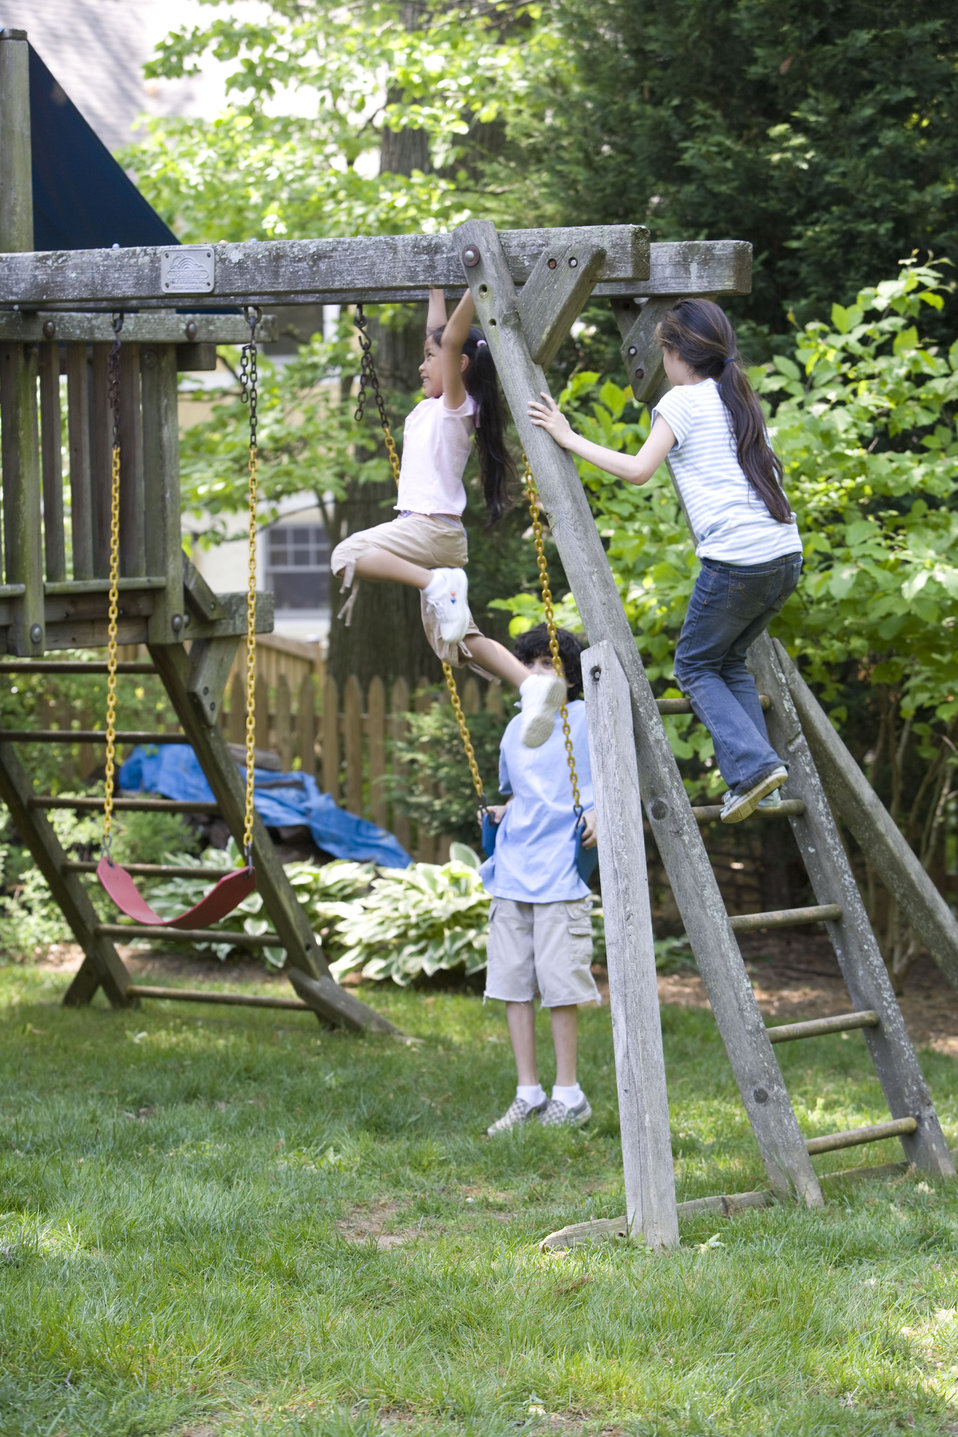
Children love playing outside, and these children were thoroughly enjoying their wooden swing set, and all were having fun in the fresh outdoor air, and the beautiful weather. It's important to note that older wooden playsets may have been treated with arsenic and/or creosote, and therefore, parents need to know if these chemicals were used in their manufacture.